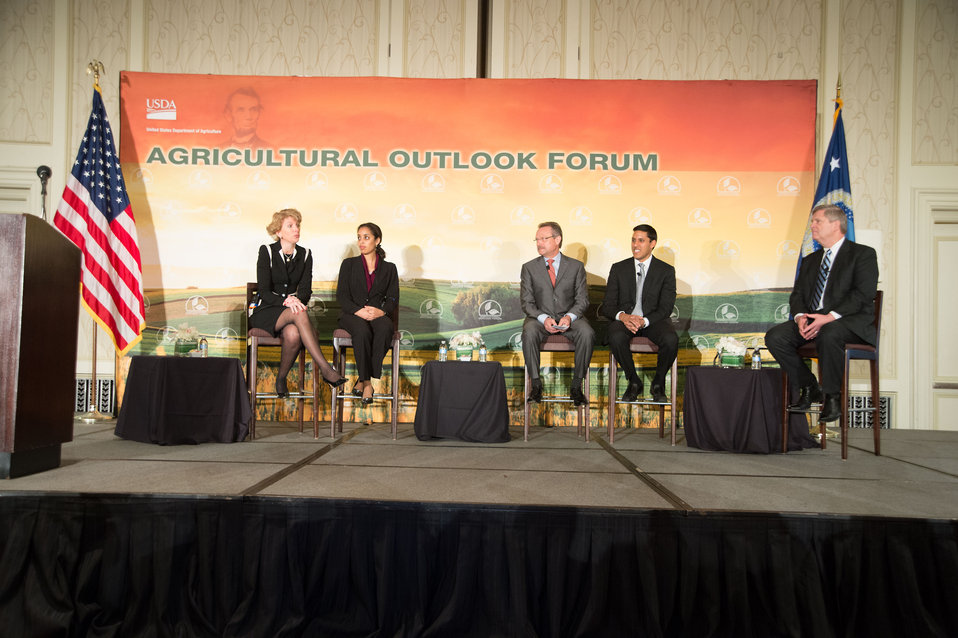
Agriculture Secretary Tom Vilsack moderates the plenary panel on Building Markets Here and Abroad at the 2014 Agricultural Outlook Forum in Arlington, VA., on Thursday, Feb. 20, 2014. (L to R Produce Marketing Association President Cathy Burns, Mercaris Founder and Chief Executive Officer Kellee James, DuPont Pioneer President Paul Schickler, U.S. Agency for International Development (USAID) Administrator Rajiv Shah, and Agriculture Secretary Tom Vilsack). The U.S. Department of Agriculture's (USDA) annual Agricultural Outlook Forum brings together the agricultural community to discuss policy, trade, science, rural development, and the economic outlook for the coming year. The Forum also focuses on forestry, health and nutrition issues, and the changing dynamics and face of rural America.USDA photo by Bob Nichols.